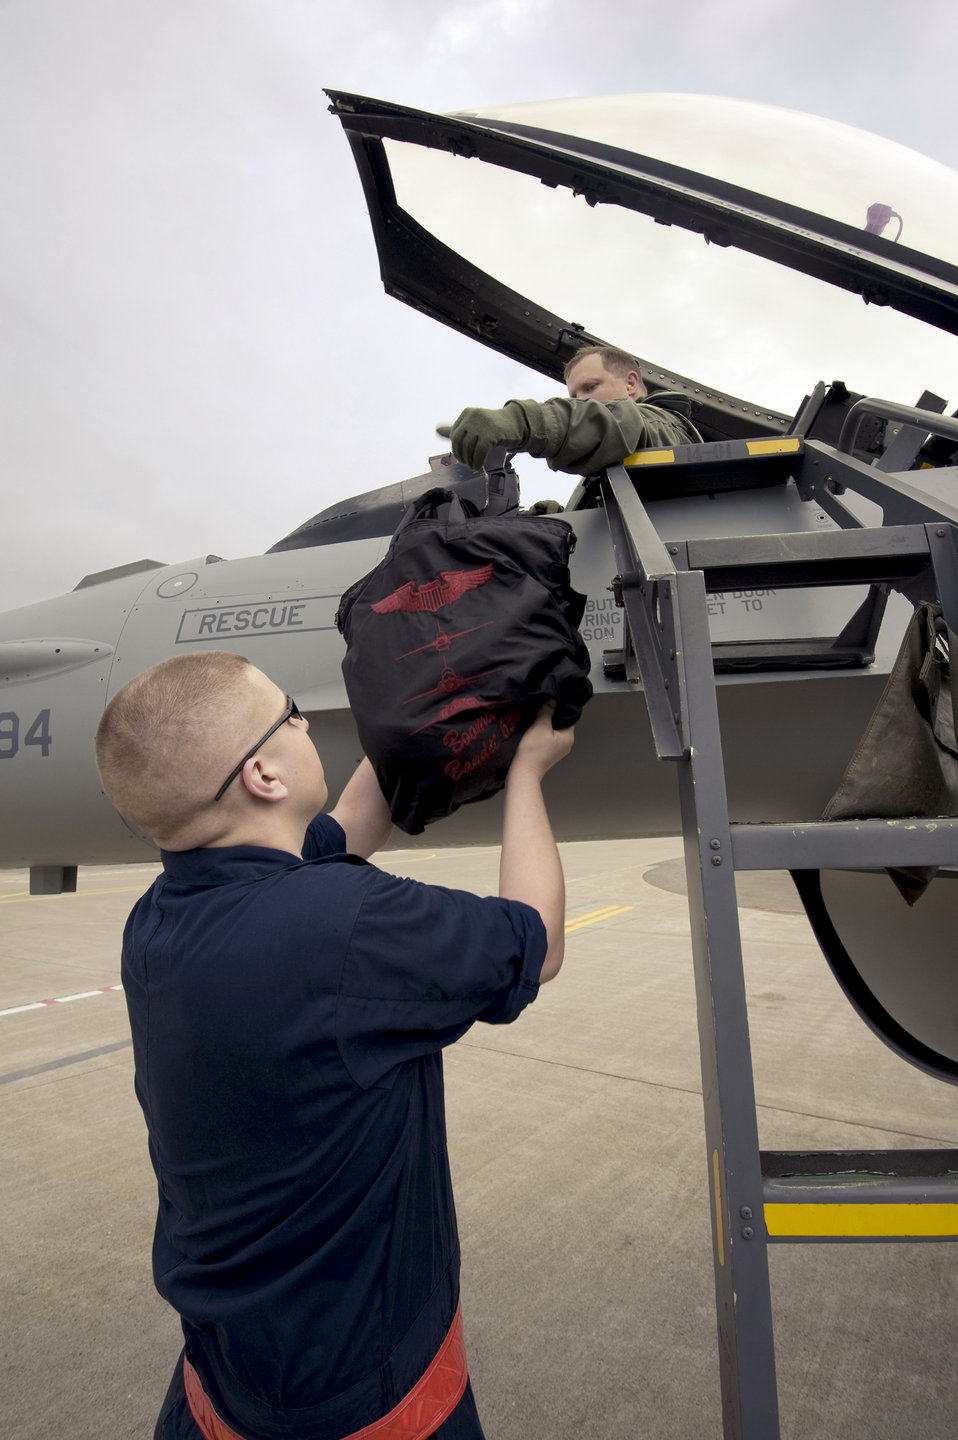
Falcon maintenance

Airman 1st Class Patric Shaw takes the flight bag from Maj. John Greven following a training sortie Aug. 2, 2010, at Misawa Air Base, Japan. Major Greven is an A5 plans and exercises officer with Detachment 1 of 13th Air Force and Airman Shaw is a crew chief assigned to the 13th Aircraft Maintenance Unit.